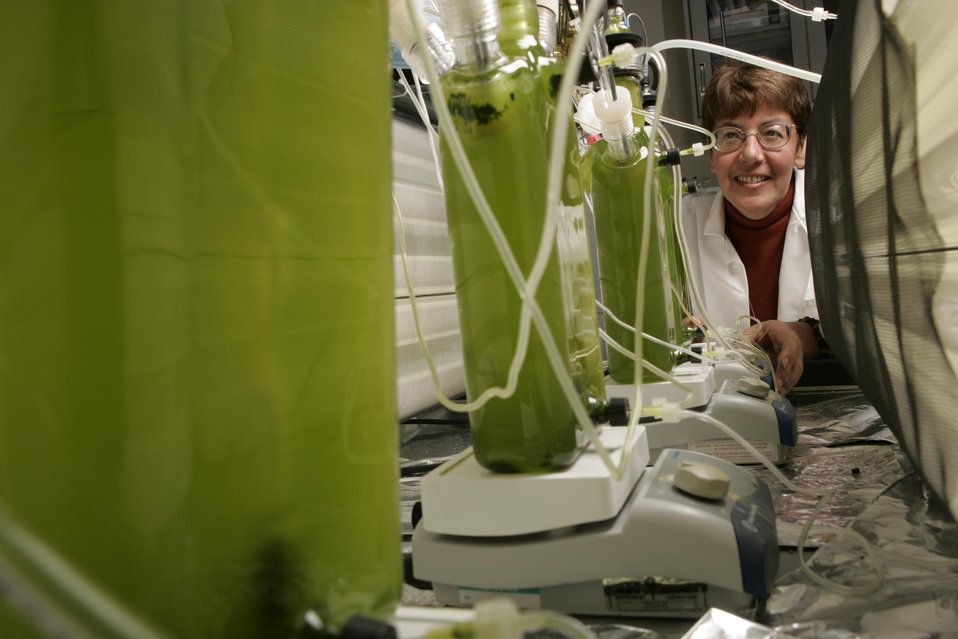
AT NATIONAL RENEWABLE ENERGY LABORATORY , RESEARCHER WORKS IN THE WEB.

Hydrogen is the simplest and most abundant element in the world and can be produced from a wide variety of domestic resources using a number of different technologies. Researchers in NREL's Basic Sciences and Computational Sciences Center are working together on a novel way to use green algae to produce hydrogen directly from water and sunlight, that, when recombined with oxygen in a fuel cell, produces clean energy without pollutants.